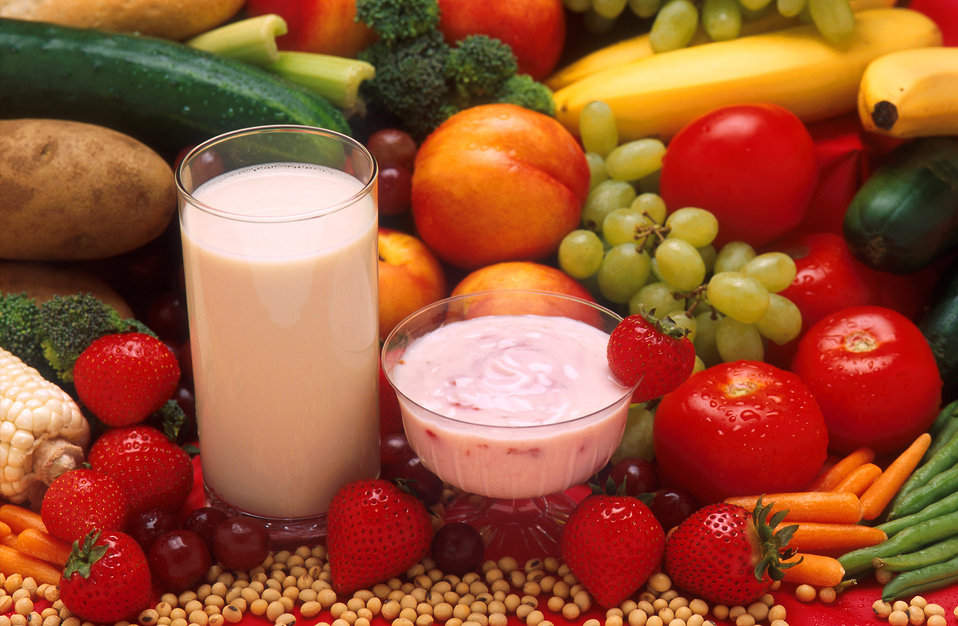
A diet rich in soy and whey protein, found in products such as soy milk and low-fat yogurt, has been shown to reduce breast cancer incidence in rats.